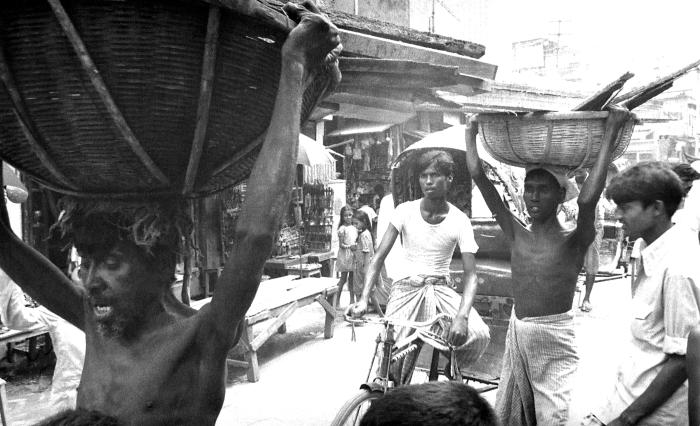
This photograph depicted the hustle-bustle of a typical Bangladesh street scene. In this instance, a number of men were carrying lumber and other stock on their heads in very large wooden baskets, while rickshaws could be seen being ridden in the background. This photograph provided by Dr. Stan Foster, and captured by Pierre Claquin, M.D., B.A.C., who at the time was a member of the World Health Organization's Smallpox Eradication Program. It was part of a series photographed by former E.I.S. officer, Stanley O. Foster M.D., M.P.H., and was one of a series entitled 'The Story of One Smallpox Jeep', which depicted the travails faced by the jeep, and its occupants of public health practitioners, as they road through the Bangladesh countryside in an attempt to eradicate smallpox from the country.